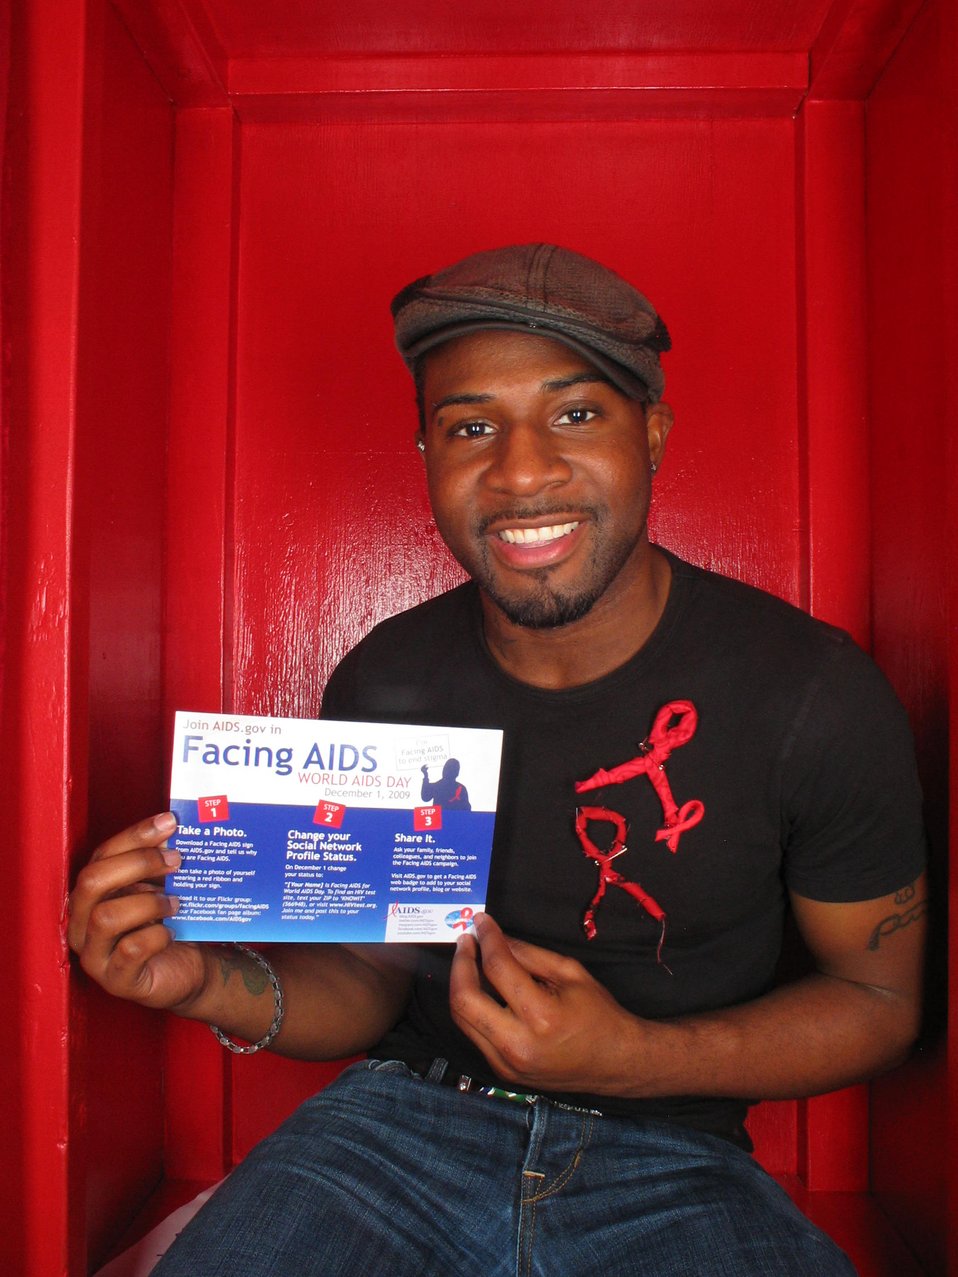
Facing AIDS